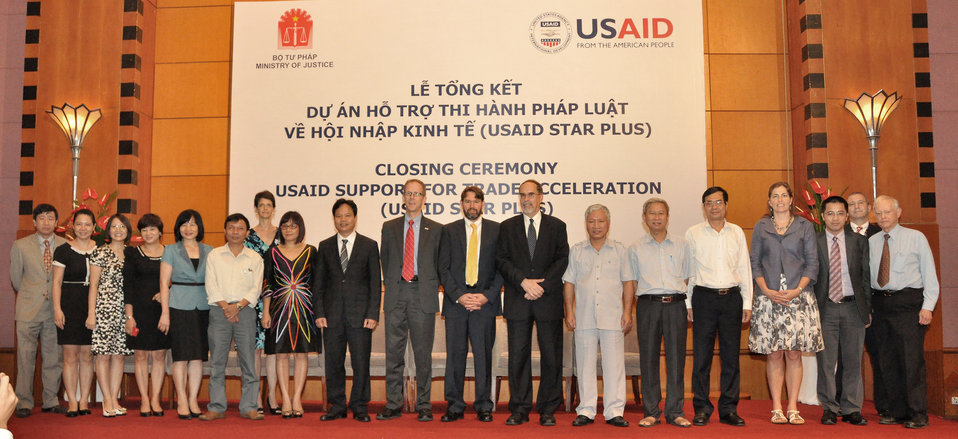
USAID's Support for Trade Acceleration Project (USAID STAR Plus) Closing Ceremony

Hanoi, August 26, 2013.